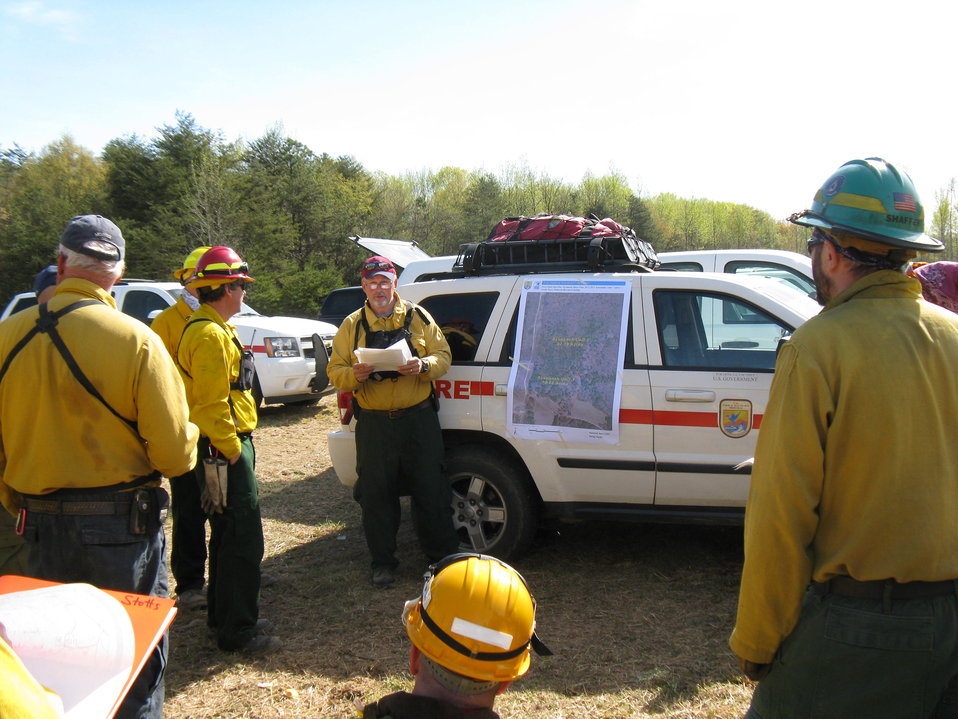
Gerald Vickers Briefs Crew

Laurel, Maryland, April 5, 2012: Northeast Regional Fire Management Specialist Gerald Vickers of the U.S. Fish and Wildlife Service gives a safety briefing to firefighters before a controlled burn. The burn was done at Patuxent Research Refuge's Savannah Restoration Unit to increase refuge species and habitat diversity. Specifically, the refuge hoped to increase density and diversity of rare darkling beetles and forest floor plants.